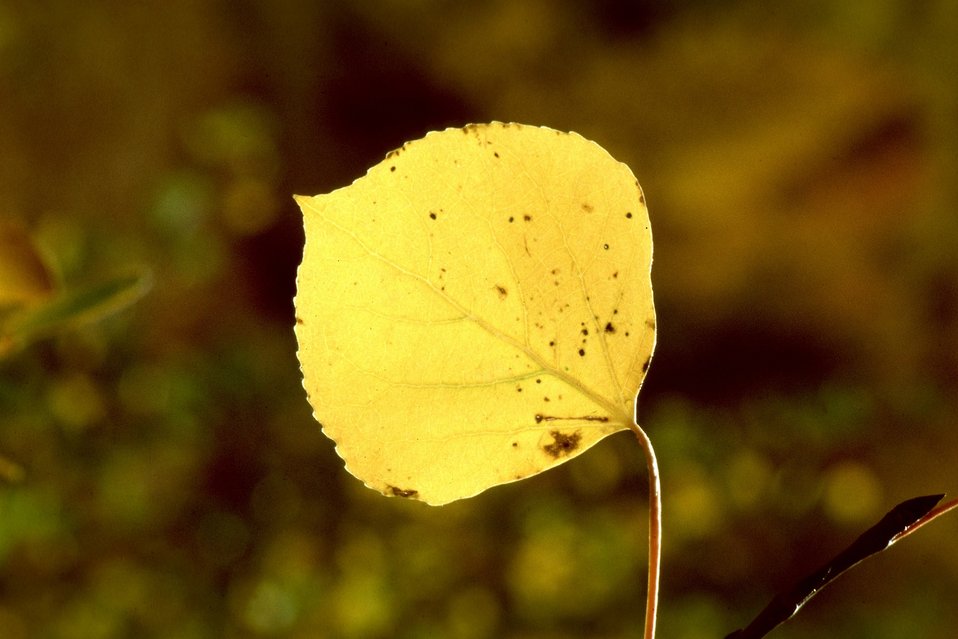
Aspen leaf. Fish Creek, Steen's Mountain.